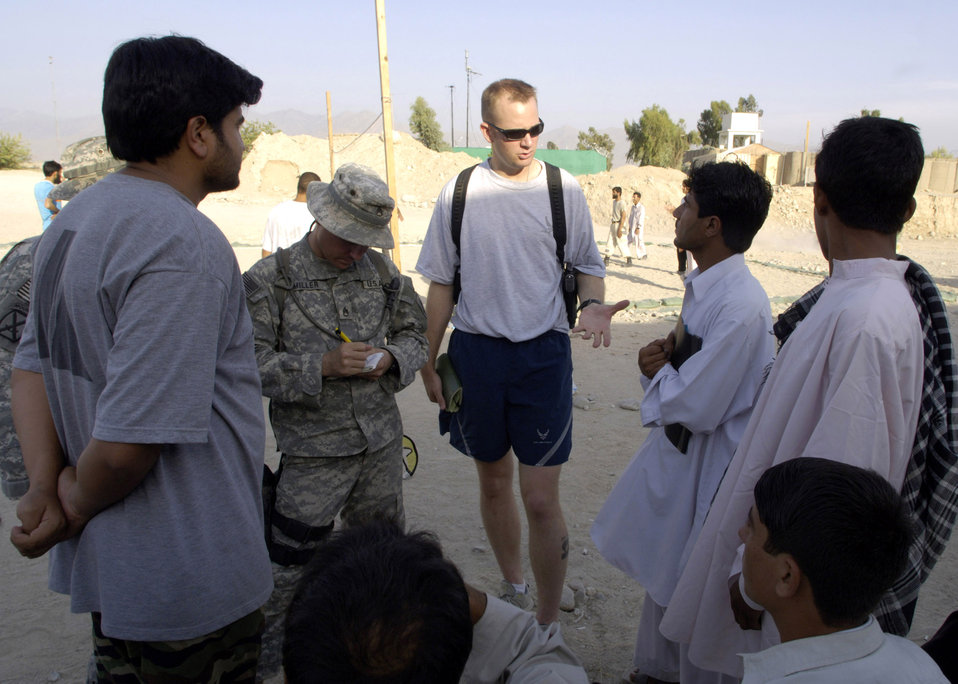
Volleyball unites Afghans, Americans

Capt. Matthew Brennan (center) talks with Jahedi, the Afghan director of the Laghman Youth Society about construction projects in the province during a weekly volleyball game hosted by Airmen and Soldiers Aug. 26 at Forward Operating Base Mehtar Lam, located in Afghanistan's Laghman Province. The volleyball games are designed to bring area high school students from the province's five districts, onto the base in order to meet and interact with military members in a friendly atmosphere. Captain Brennan is a Provincial Reconstruction Team member and a civil engineer.